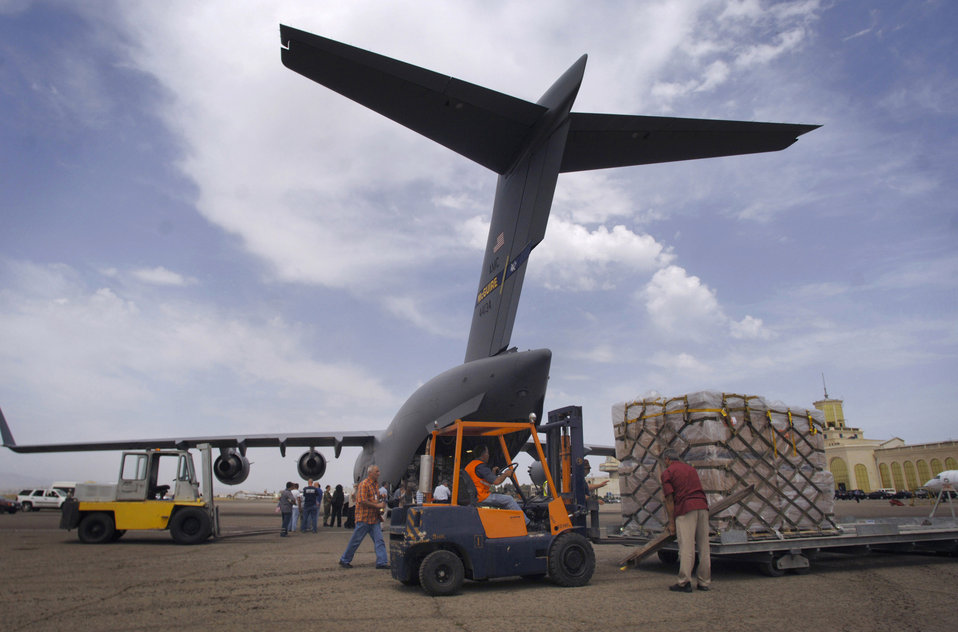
Airmen poised to support humanitarian operations in N.D.

A C-17 Globemaster III, such as the one show here from McGuire Air Force Base, N.J., has been placed on standby to provide humanitarian relief to flood victims in North Dakota, if called upon.